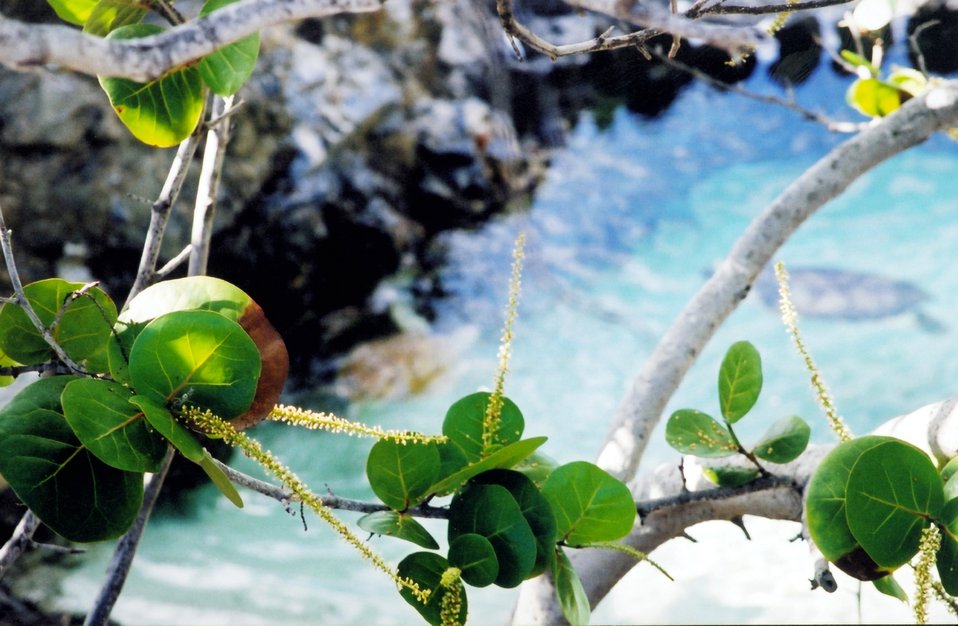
Looking through local flora at the turtle pool at Coral World.